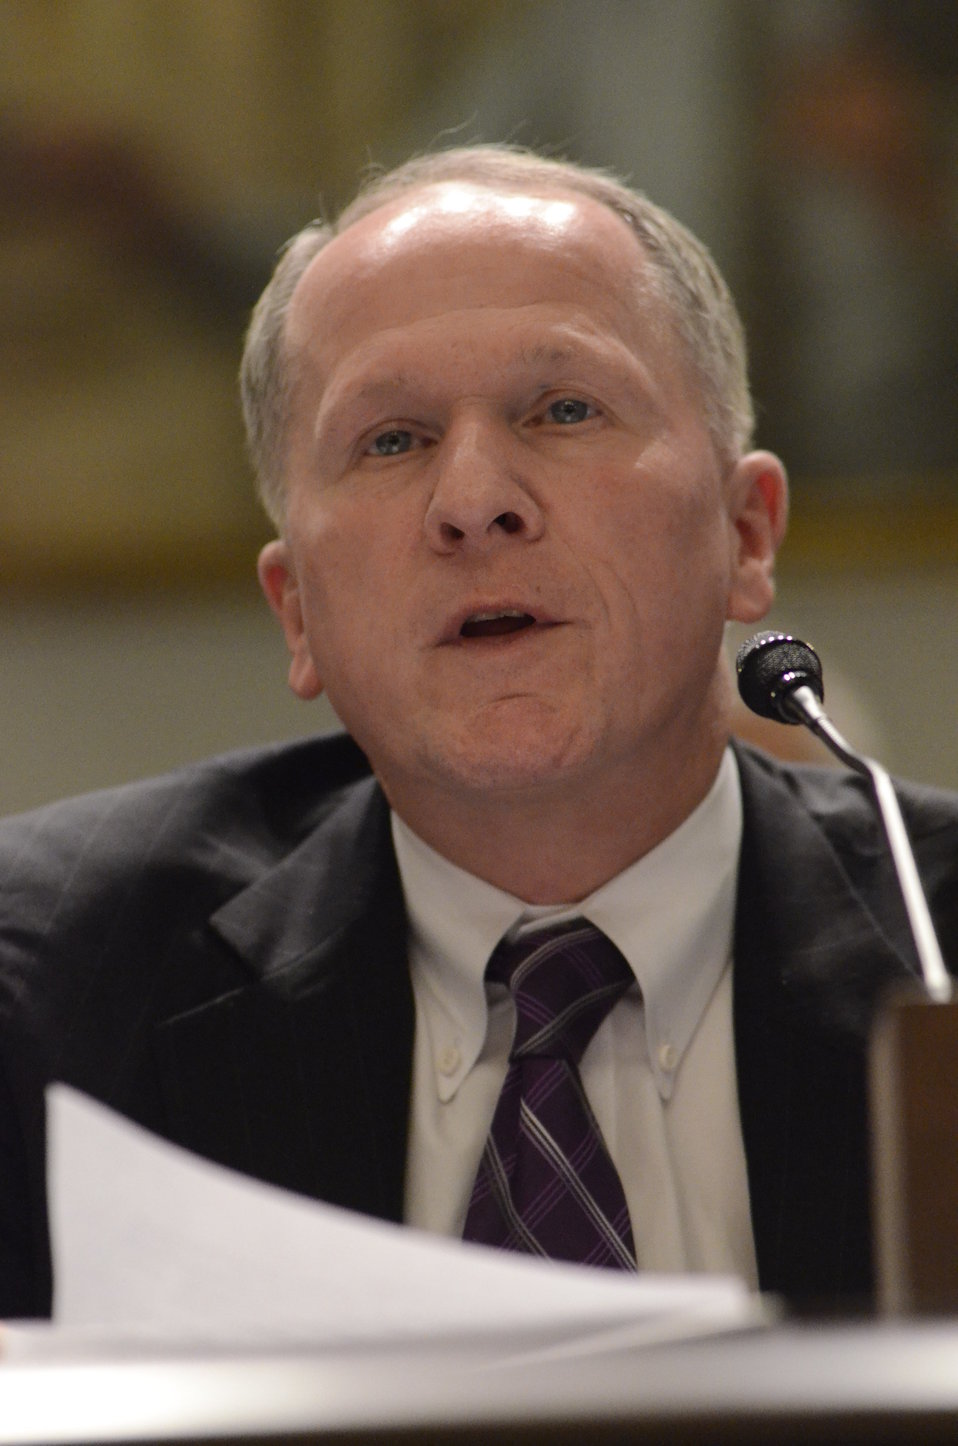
Agriculture Department Animal Plant and Health Inspection Service (APHIS) Associate Administrator Dr. Kevin Shea speaking on Retailers & Entertainers Lacey Implementation & Enforcement Fairness Act & Freedom from Over-Criminalization & Unjust Seizures Act at the Longworth House Office Building in Washington, D.C. on Tuesday, May 8, 2012.